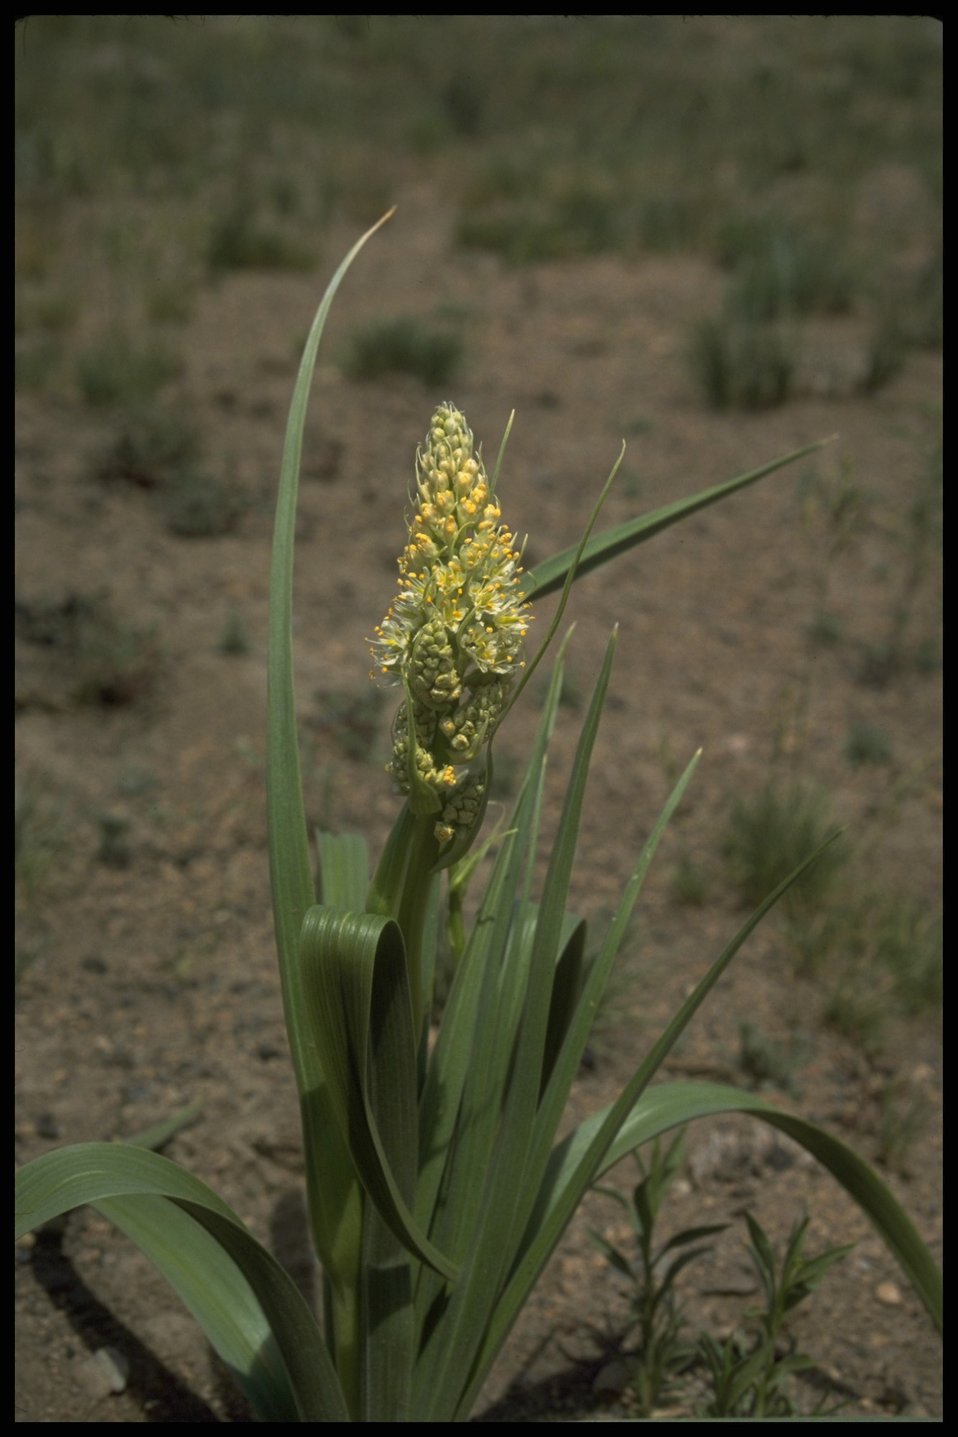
Medium shot of Death Camas wildflower, Lakeview District.